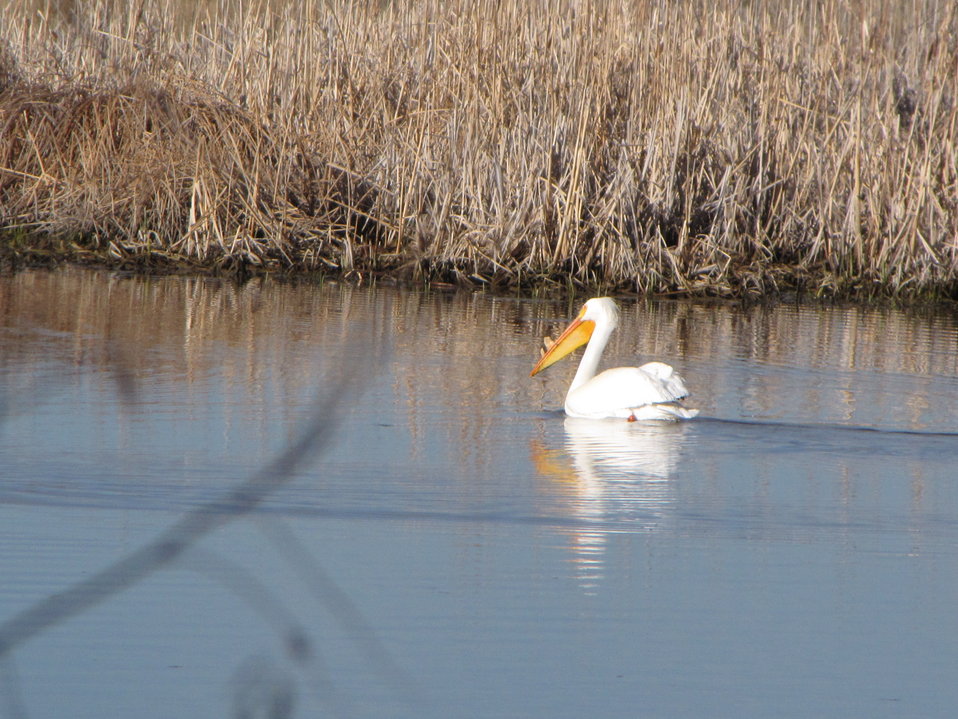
American White Pelican

This feathered-friend made a visit to the Bear River Migratory BIrd Refuge wetlands - an American White Pelican.